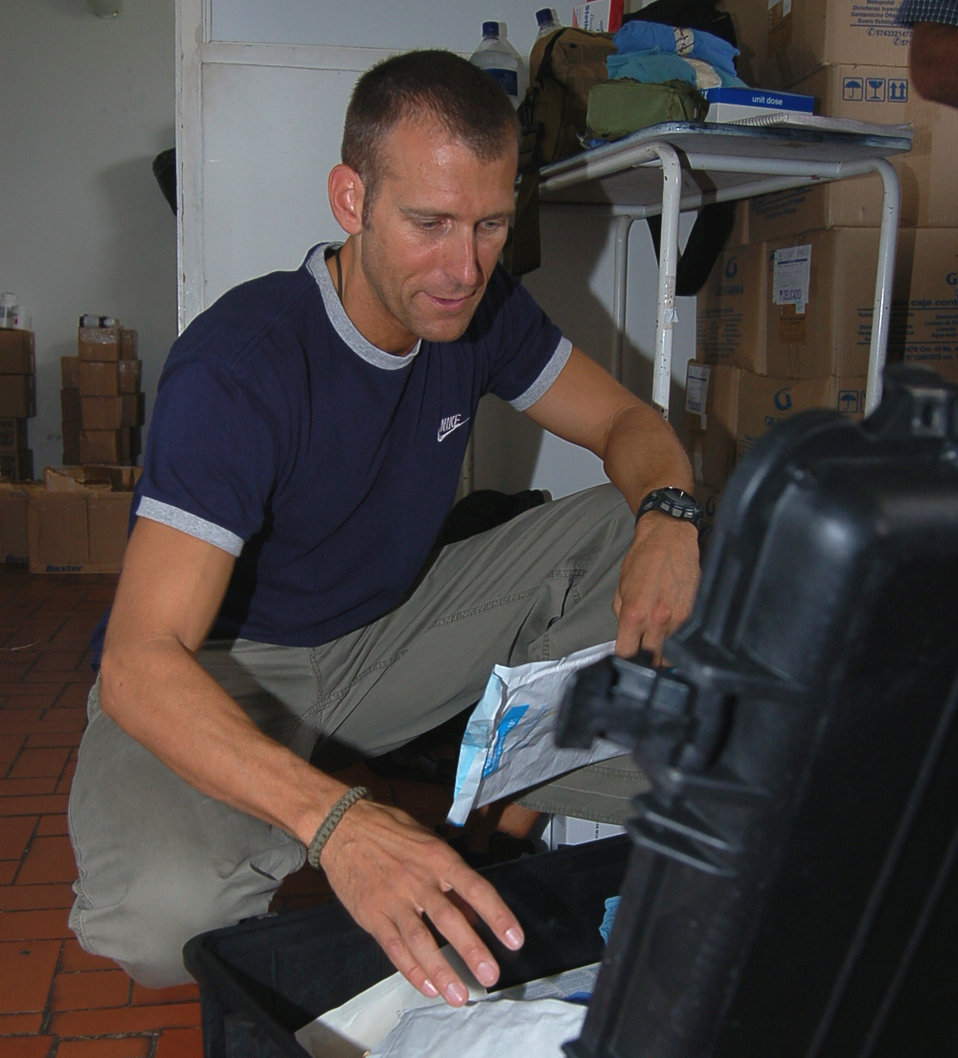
Air Force dentist aids Colombian people

Lt. Col. Gary Geracci, a oral surgeon, unpacks medical supplies in preparation for a Medical Readiness Training Exercise which begins Sept. 12 in Popayan, Colombia. The colonel is assigned to the 55th Medical Group at Offutt Air Force Base, Neb.